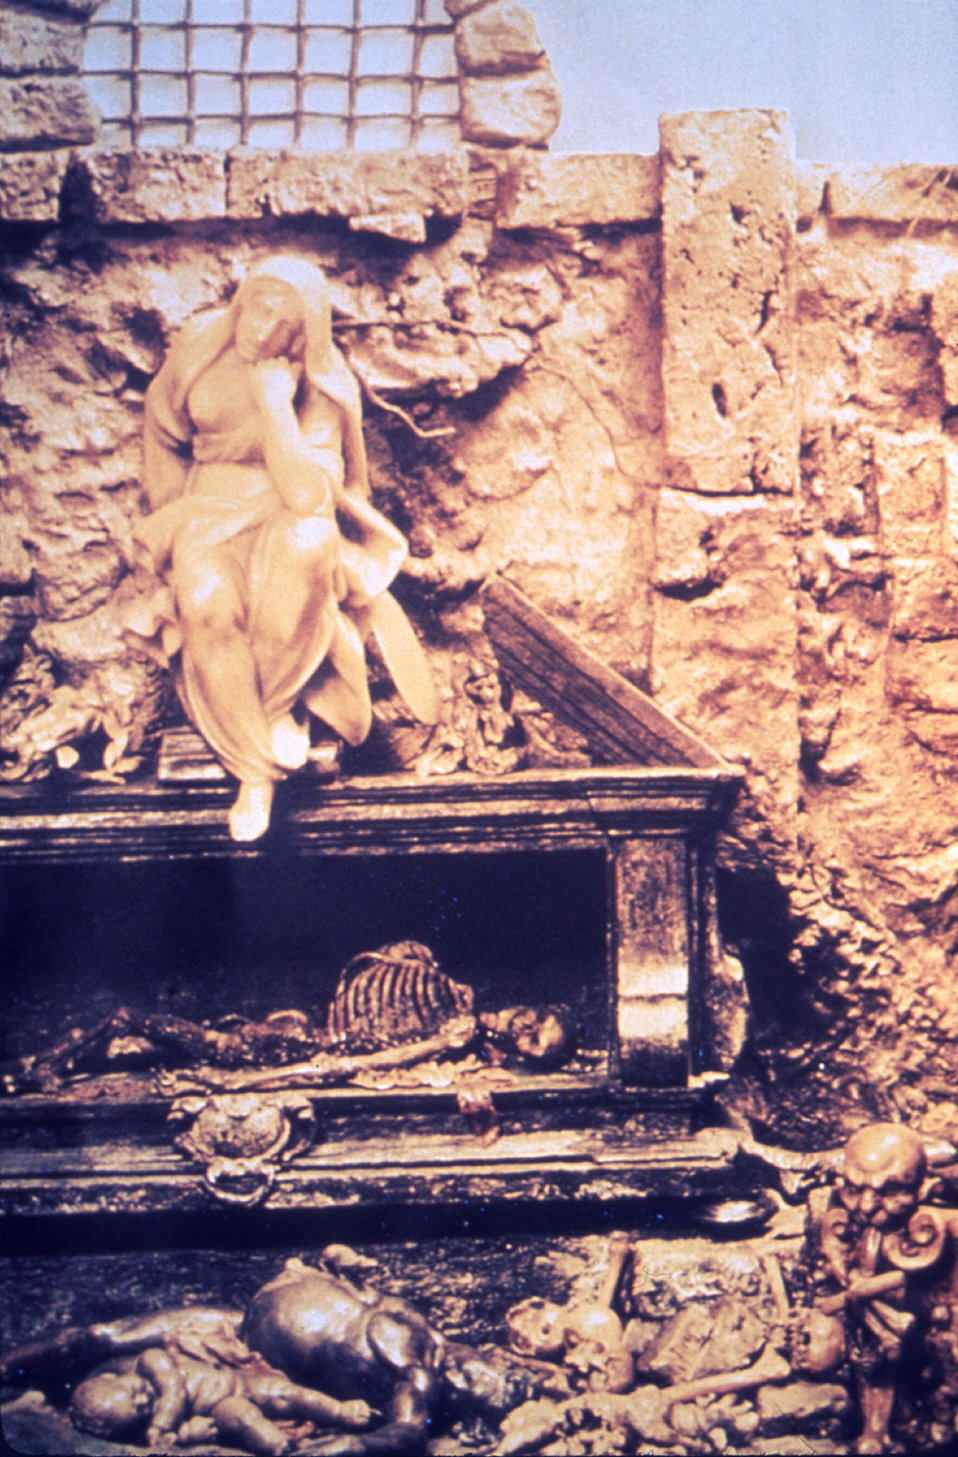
This is a detailed view of The Plague, a wax relief sculpture by the 17th Italian artist Gaetano Zumbo, (1656 - 1701).